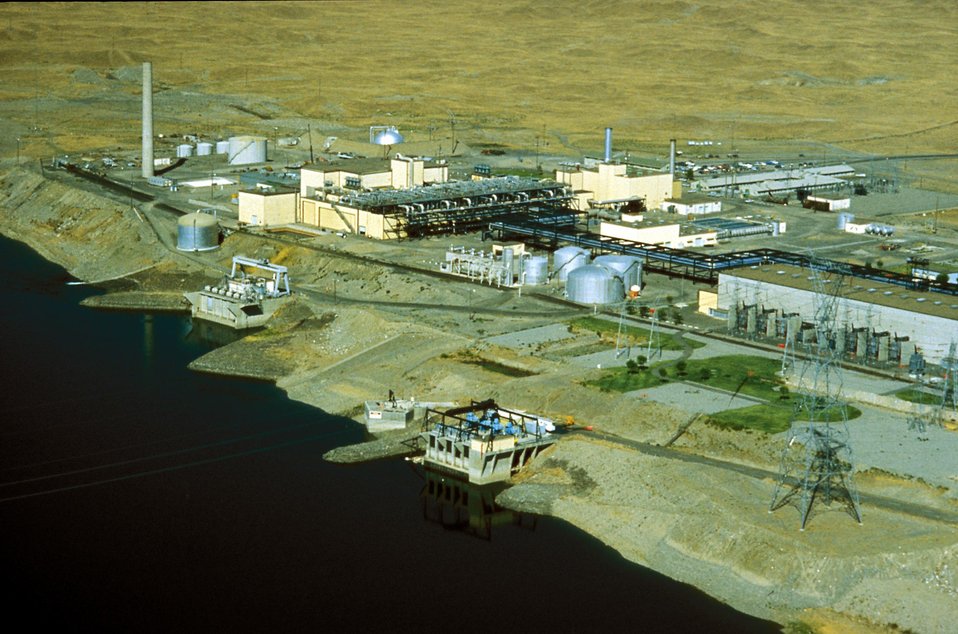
AERIAL VIEW OF N-REACTOR SITE AT HANFORD, WA.

THE N-REACTOR AT HANFORD IS CURRENTLY ON COLD STAND BY (NOT OPERATING).